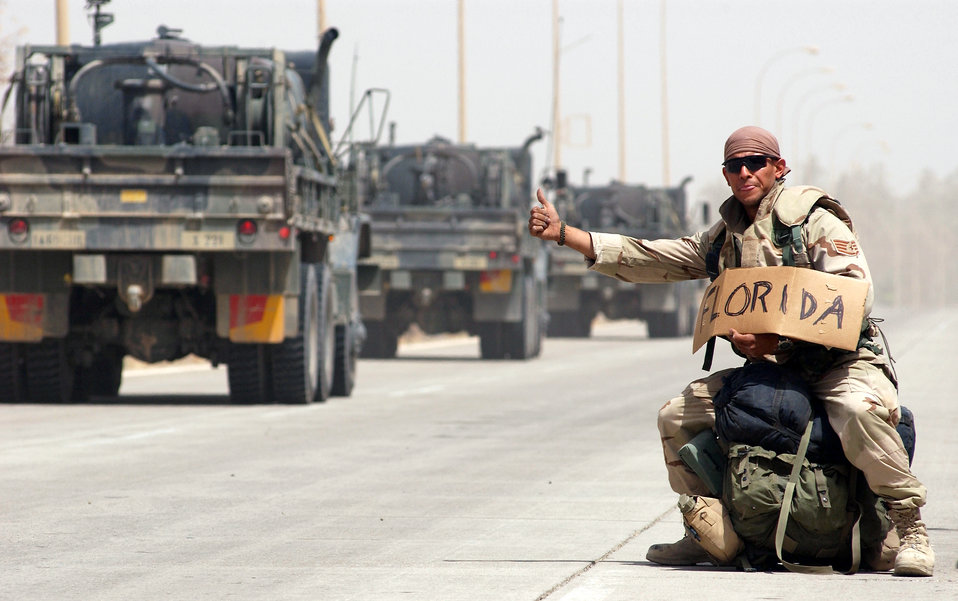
Thumbin' a ride

BAGHDAD, Iraq -- Staff Sgt. Rene Anderson takes a moment to have a little fun during a convoy's delay at Baghdad International Airport on June 25. The convoy was established to pick-up and deliver supplies and vehicles to Kirkuk Air Base in northern Iraq. Anderson is assigned to the 506th Expeditionary Logistics Readiness Squadron.